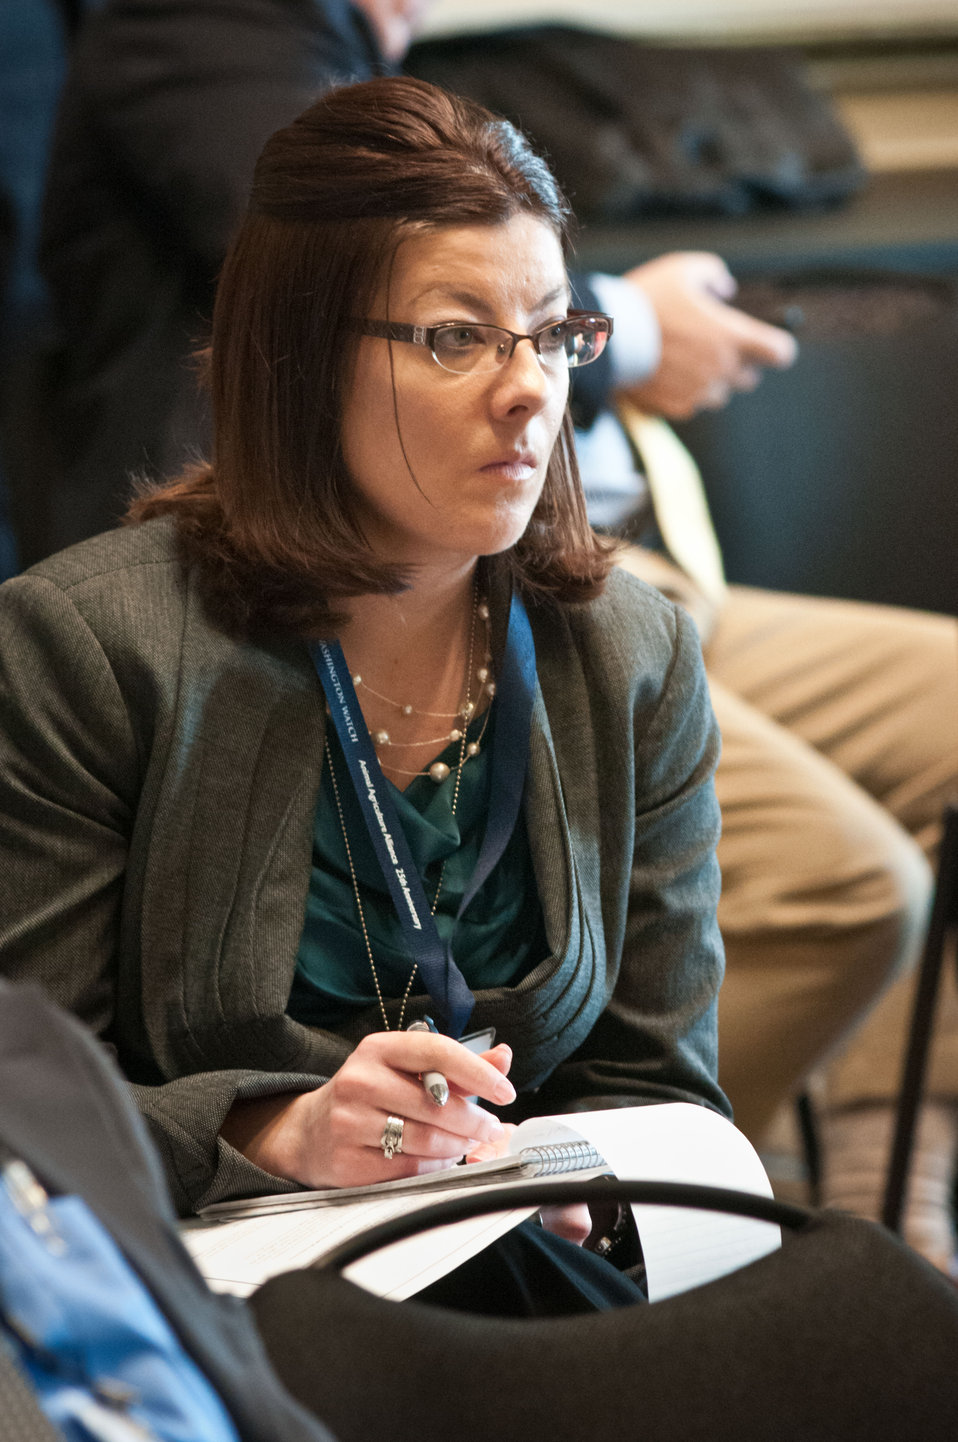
Leslie Smith, KNEB, Scottsbluff, Nebraska takes notes during the Spring National Association of Farm Broadcasters (NAFB), “Washington Watch” member retreat in Washington, D.C. This year the meeting was held in the Eisenhower Executive Office Building, Indian Treaty Room on Tuesday, April 24, 2012, featuring United Sates Department of Agriculture and Obama Administration officials. This opportunity provides an occasion to highlight efforts to rebuild and revitalize rural America, including efforts for the agricultural community. NAFB is the recognized and trusted source of agricultural and rural lifestyle information for America with approximately 200 members who broadcast via radio in nearly every state in the country.